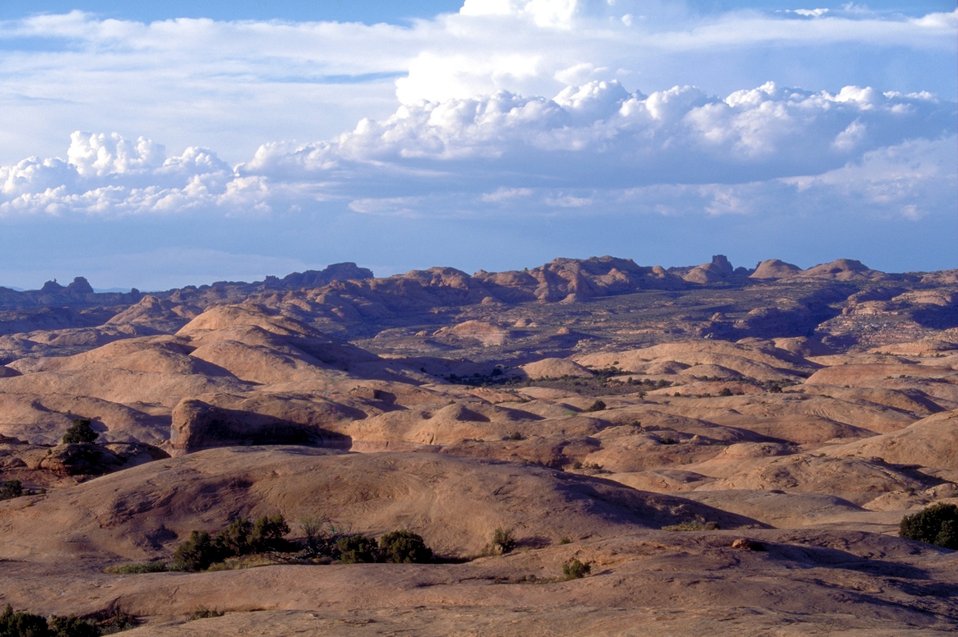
Moab Slickrock Bike Trail near Moab, Utah.